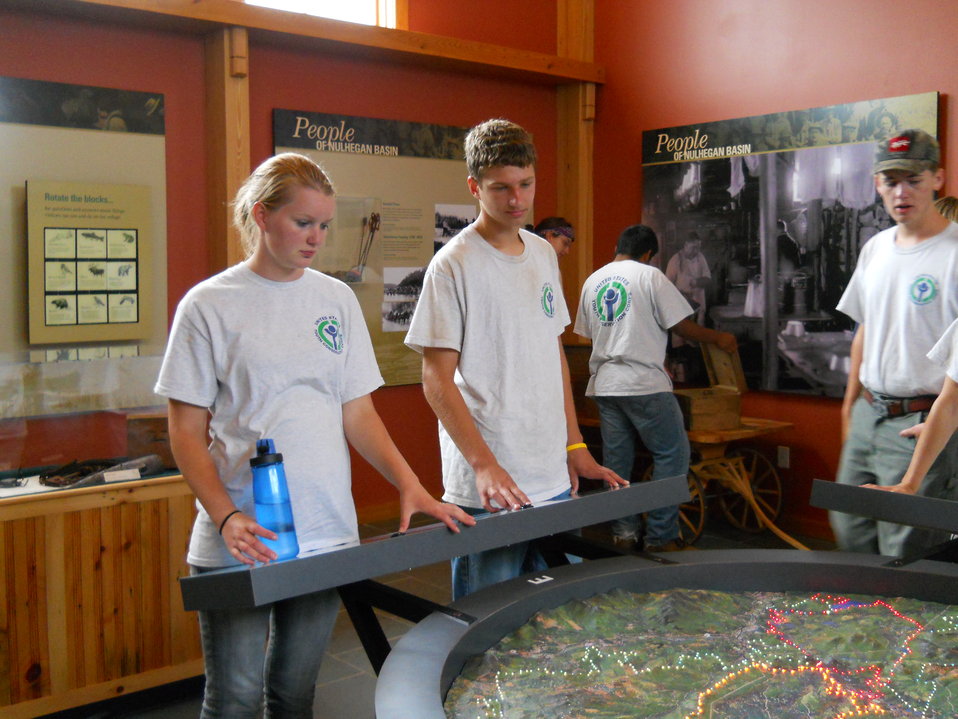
Environmental Education at the Great Falls Discovery Center

The YCC crew of the Silvio O. Conte National Fish and Wildlife Refuge visits the refuge's Great Falls Discovery Center.